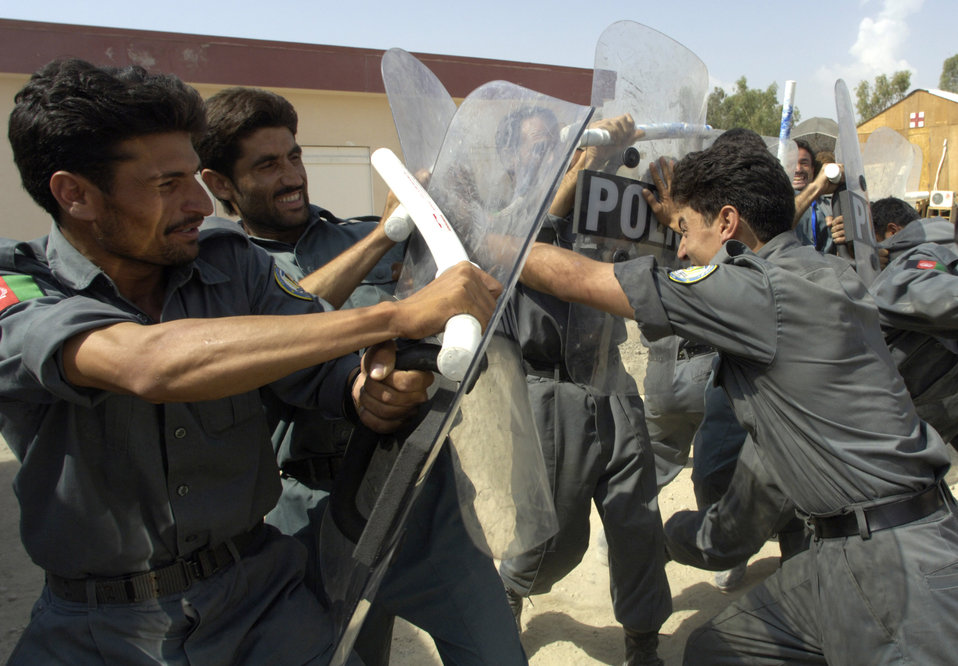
Afghans train Afghans with American mentorship

Afghan National Auxiliary Police trainees practice riot control techiniques Sept. 6 held on forward operating base Mehtar Lam in Afghanistan's Laghman province. The two-week ANAP sustainment course is being taught for the first time entirely by Afghan National police instructors. A police technical advisory team made up of U.S. Air Force security forces Airmen assigned to the Laghman Provincial Reconstruction Team previously conducted all ANP instruction.